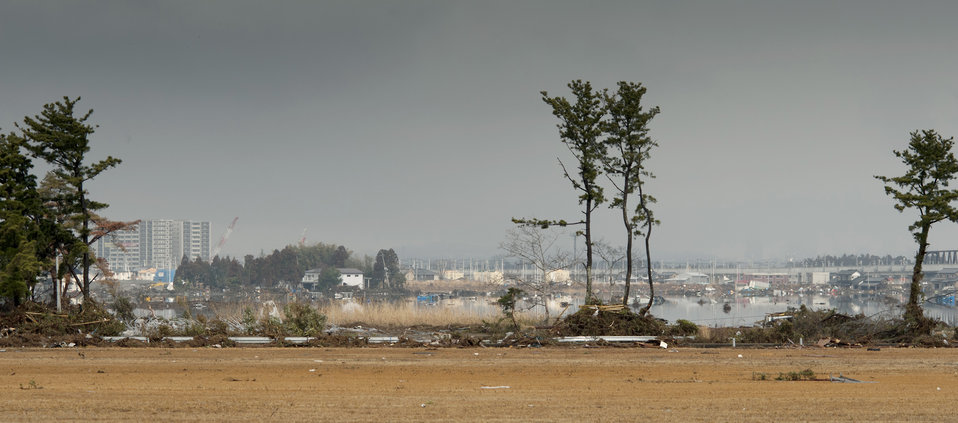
Headline

Debris covers the shores and low-lying ground around Sendai Airport, Japan, March 16, 2011. Members of the 320th Special Tactics Squadron from Kadena Air Base, Japan, deployed to Sendai Airport to help clear the runway and make it ready for fixed-wing aircraft traffic.